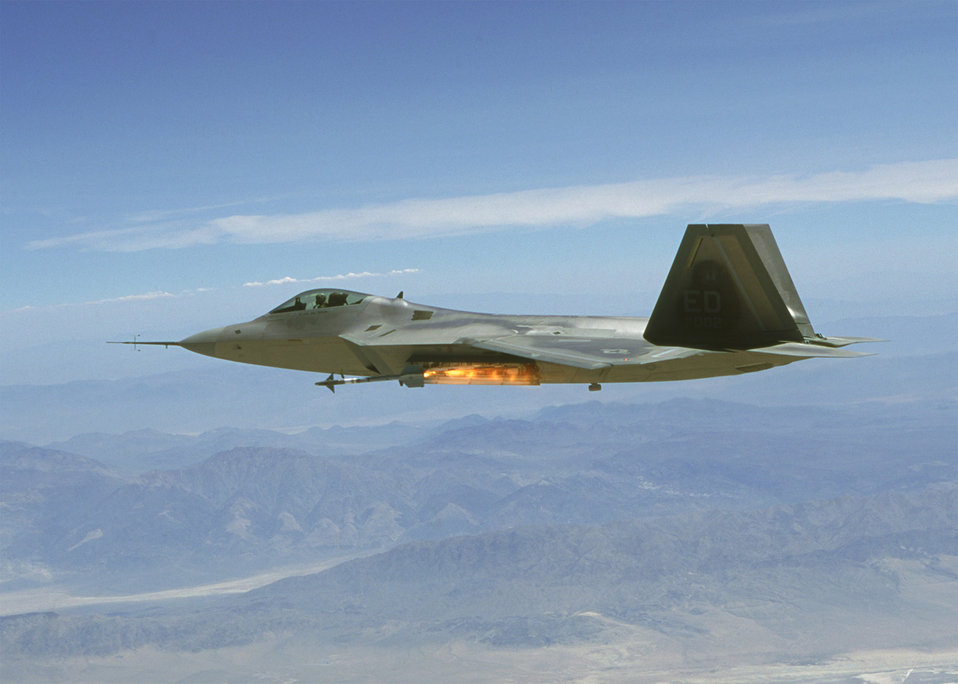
Sidewinder launch

EDWARDS AIR FORCE BASE, Calif. -- An AIM-9 Sidewinder missile begins its early separation from an F/A-22 Raptor during a launch. The major milestone test evaluated the next-generation fighter's ability to fire an air-to-air missile from an internal weapons bay.